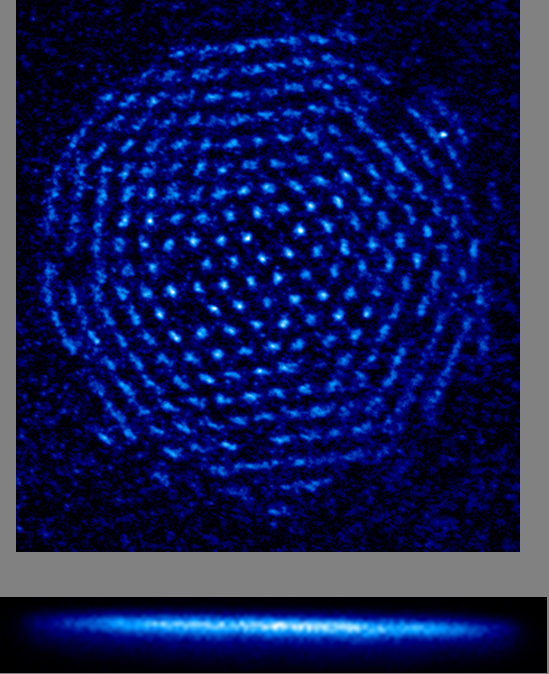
NIST Develops Powerful Method of Suppressing Errors in Many Types of Quantum Computers

Under certain conditions, trapped beryllium ions form a hexagonal single-plane crystal. This crystal consists of about 300 ions that are spaced about 10 micrometers apart and are fluorescing (scattering laser light). An array of ions such as this might be used as a memory device in a quantum computer.